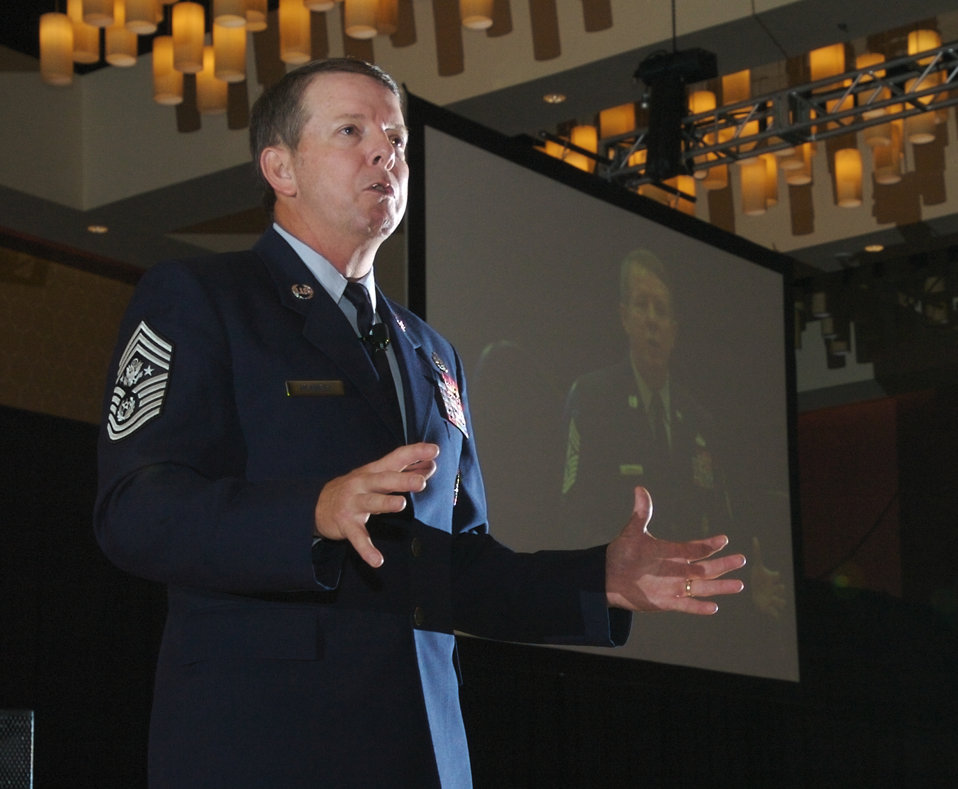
CMSAF highlights warrior Airmen, Air Force focus areas

Chief Master Sergeant of the Air Force Rodney J. McKinley speaks during the Air Force Sergeants Association's annual Professional Airmen's Conference and International Convention Aug. 26 in San Antonio.